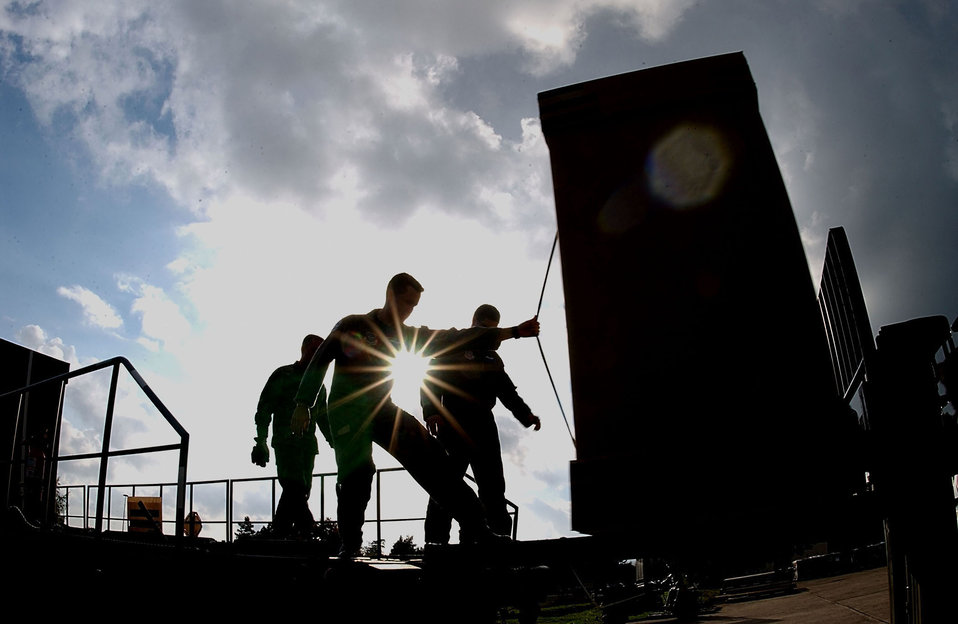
Humanitarian daily rations

RAMSTEIN AIR BASE, Germany -- Airmen containerize humanitarian daily rations Oct. 4 before they are placed on board a C-17 Globemaster III. The humanitarian supplies were airdropped Oct. 7 over eastern Afghanistan as part of Operation Enduring Freedom.